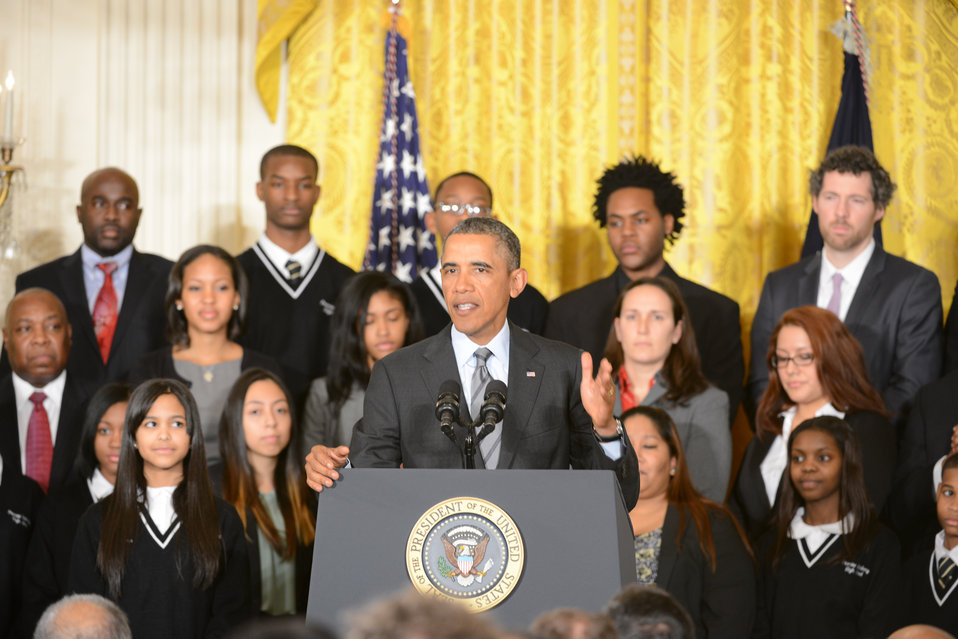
President Barack Obama announces tthe first five “Promise Zones,” located in San Antonio, TX, Philadelphia, PA, Los Angeles, CA, Southeastern Kentucky, and the Choctaw Nation of Oklahoma.